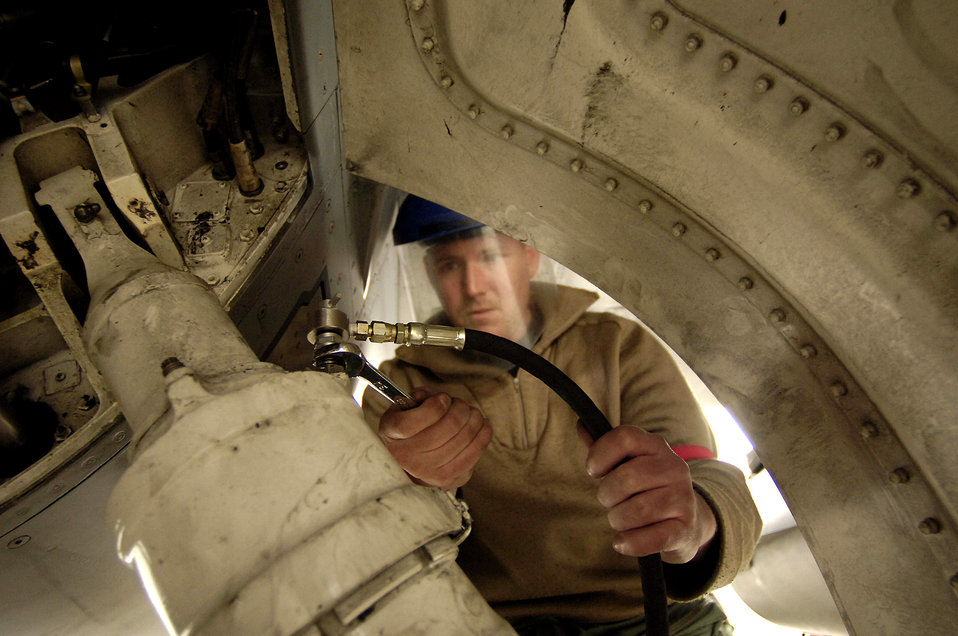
Strut maintenance

MOUNTAIN HOME AIR FORCE BASE, Idaho -- Staff Sgt. Jason Bass performs maintenance on an F-16 Fighting Falcon strut during exercise Sharpshooter 06-01. Sergeant Bass is a crew chief for the 389th Fighter Squadron.